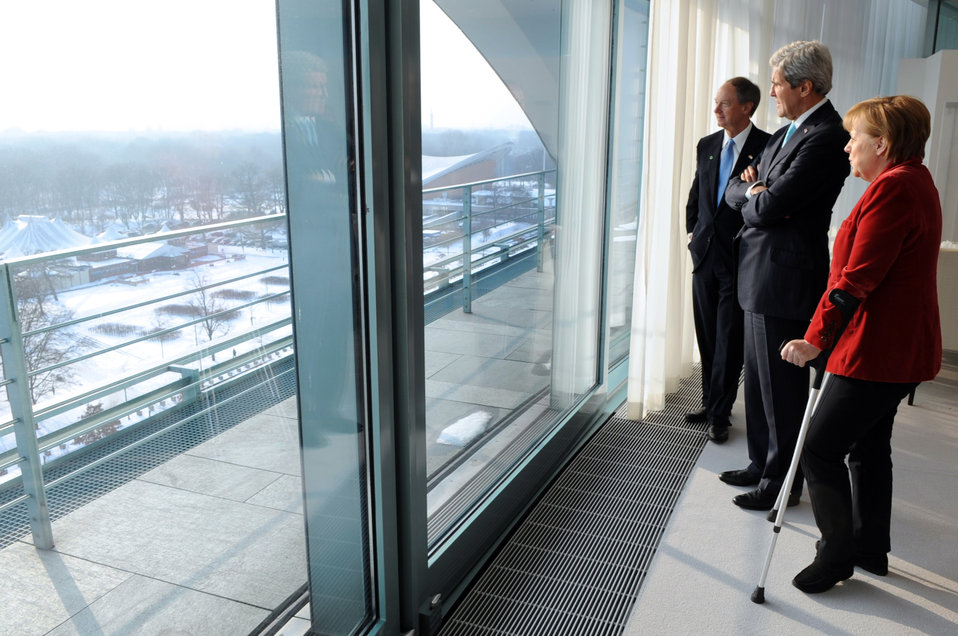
German Chancellor Merkel, Secretary Kerry, and Ambassador Emerson Look Out at Berlin Landmarks

German Chancellor Angela Merkel, U.S. Secretary of State John Kerry, and U.S. Ambassador to Germany John Emerson admire the view of Berlin, Germany, from Merkel's office in the Chancellery on January 31, 2014.